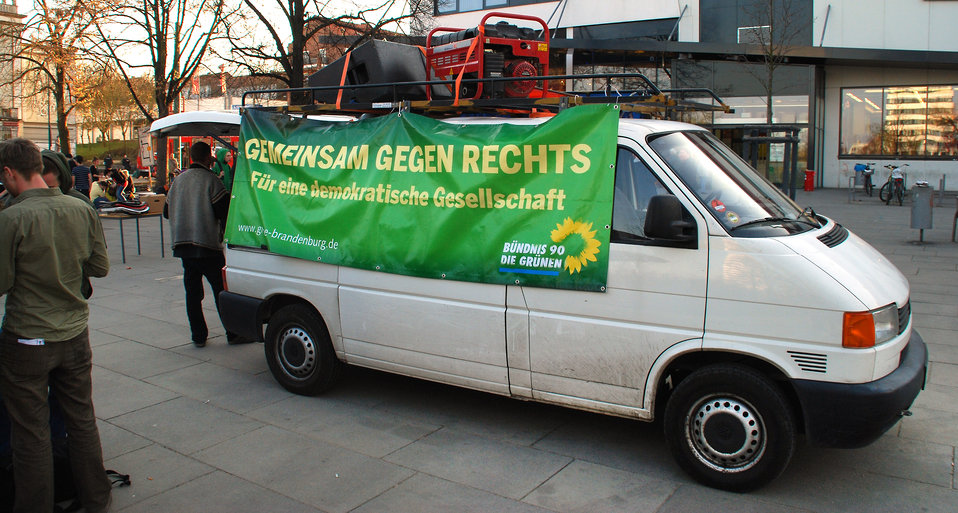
Deutsch: Proteste gegen den Nazi-Aufmarsch am 24.3.2012 in Frankfurt (Oder). Lauti Bündnis 90/Die Grünen